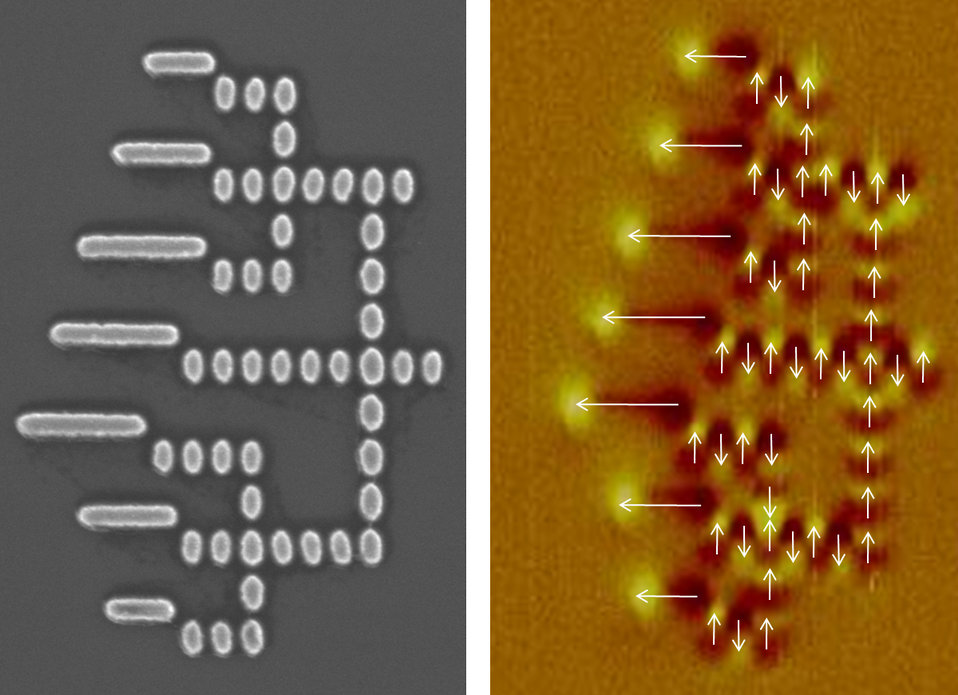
Post-CMOS Electronics

One nanoelectronics approach studied by the NRI MIND center is nanomagnet logic (NML)--logic circuits that work by magnetic coupling between neighboring nanoscale magnets. Here, SEM (l) and magnetic force microscope (r) images show an NML circuit that adds binary numbers.